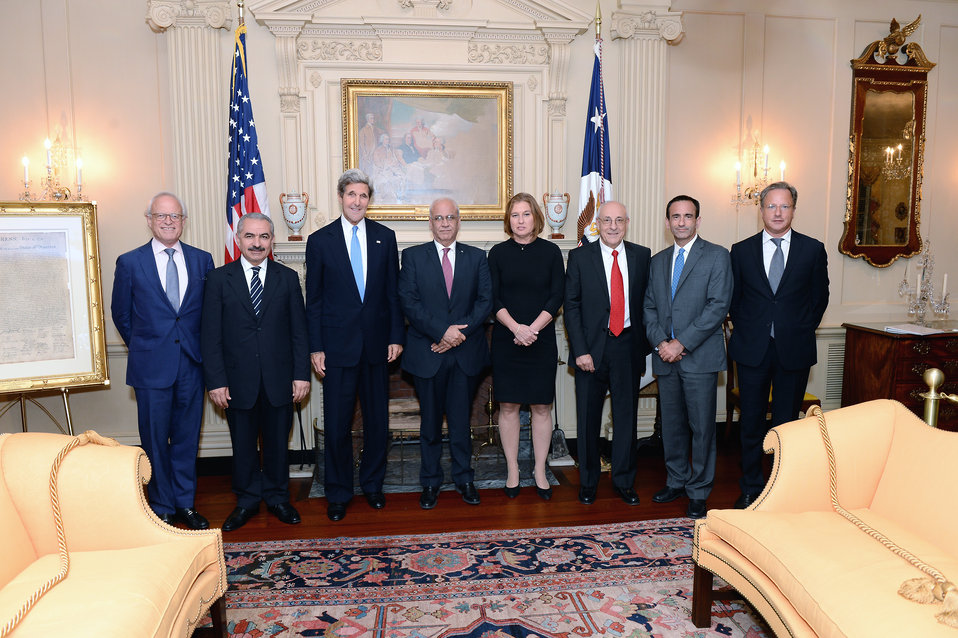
Secretary Kerry Hosts an Iftar for the Israeli Justice Minister Livni and Palestinian Chief Negotiator Erekat

U.S. Secretary of State John Kerry hosts an Iftar for Israeli Justice Minister Tzipi Livni and Palestinian Chief Negotiator Saeb Erekat at the U.S. Department of State in Washington, D.C., on July 29, 2013.